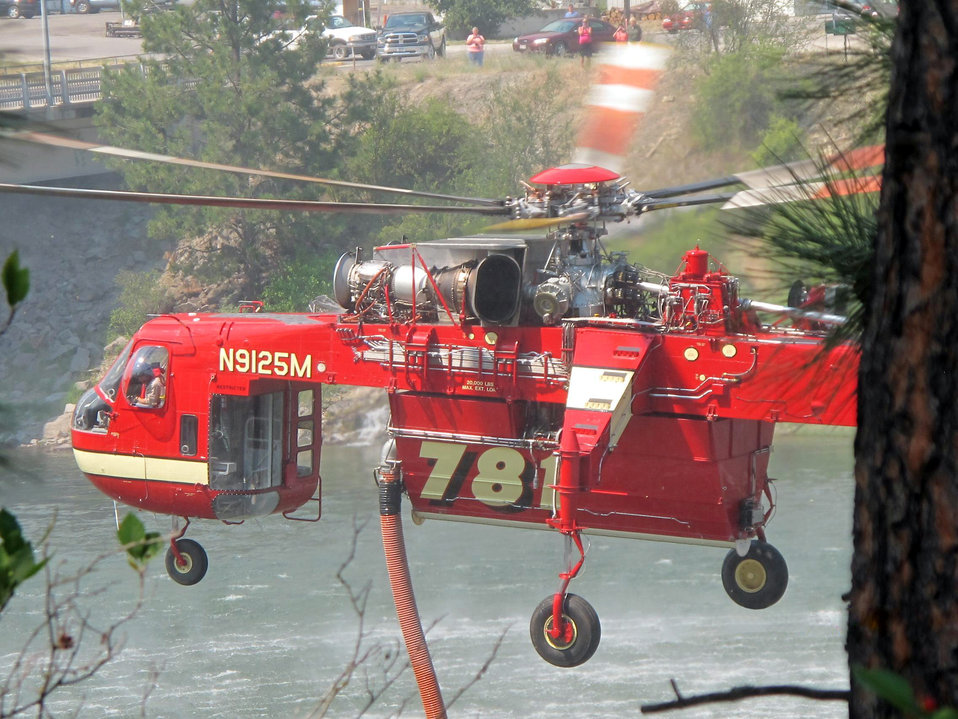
A Type 1 helicopter takes on water at the Clark Fork River to fight the West Mullan Fire in the Lolo National Forest, MT. The West Mullan Fire in the Lolo National Forest in Montana near Superior, MT began on Jul. 14, 2013 was due to human interference and has consumed approximately 6, 090 acres. The West Mullan Fire is approximately 45% contained.